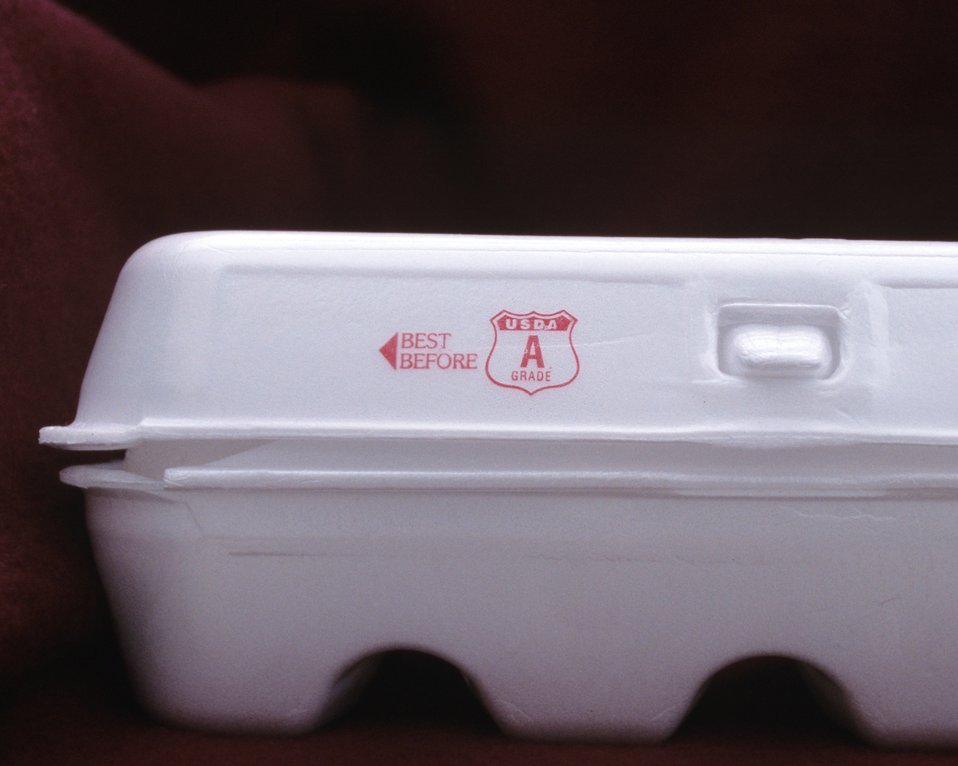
The voluntary U.S. Department of Agriculture (USDA) Agricultural Marketing Service (AMS) shell egg grading program operates under prescribed standards, grades, and weight classes as well as the shell egg grading regulations. This voluntary program provides for interested parties a national grading service based on official U.S. standards, grades, and weight classes for shell eggs. The costs for providing this grading program are paid by the user of the service. Labels for shell eggs that include the USDA grade shield indicate that USDA has officially graded that product and that the product met all requirements of the designated quality standard.